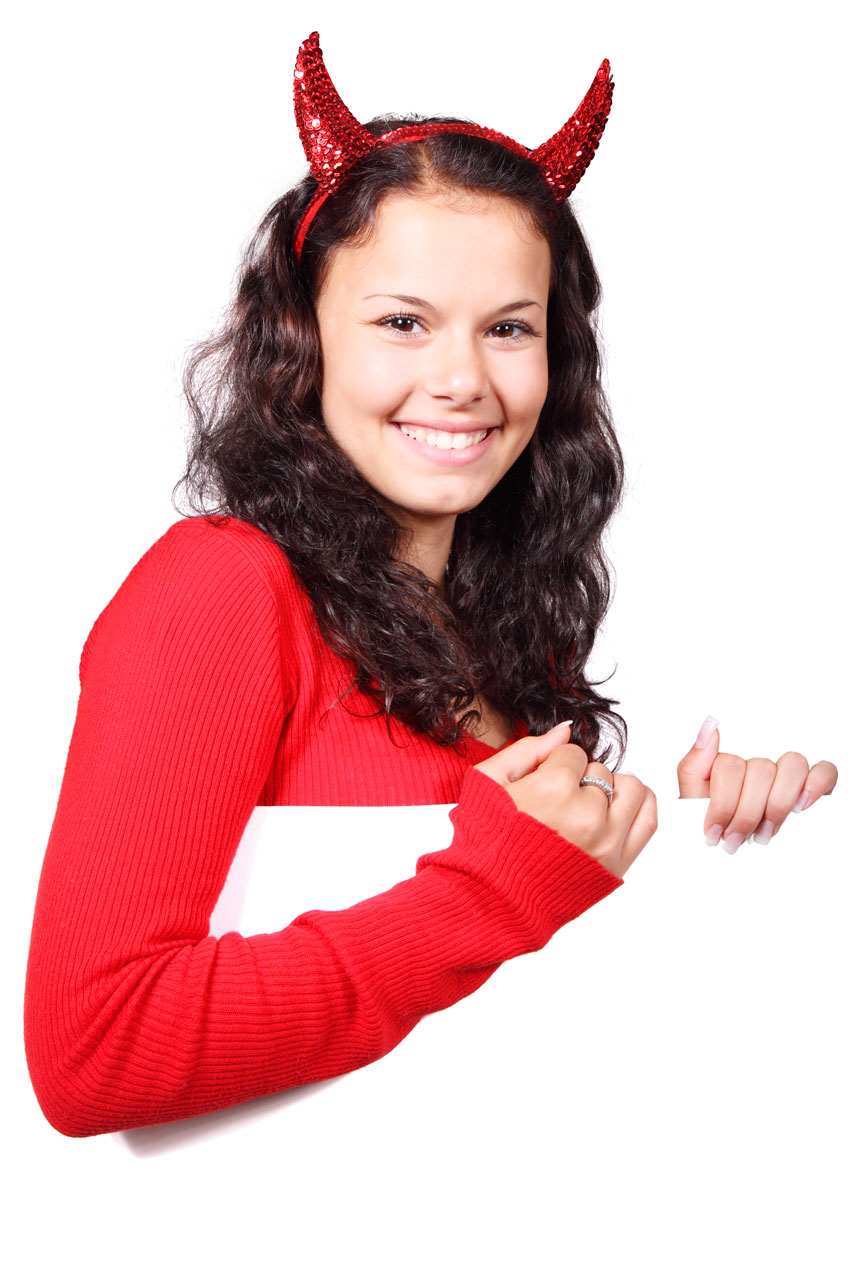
Smiling red devil carrying white board.